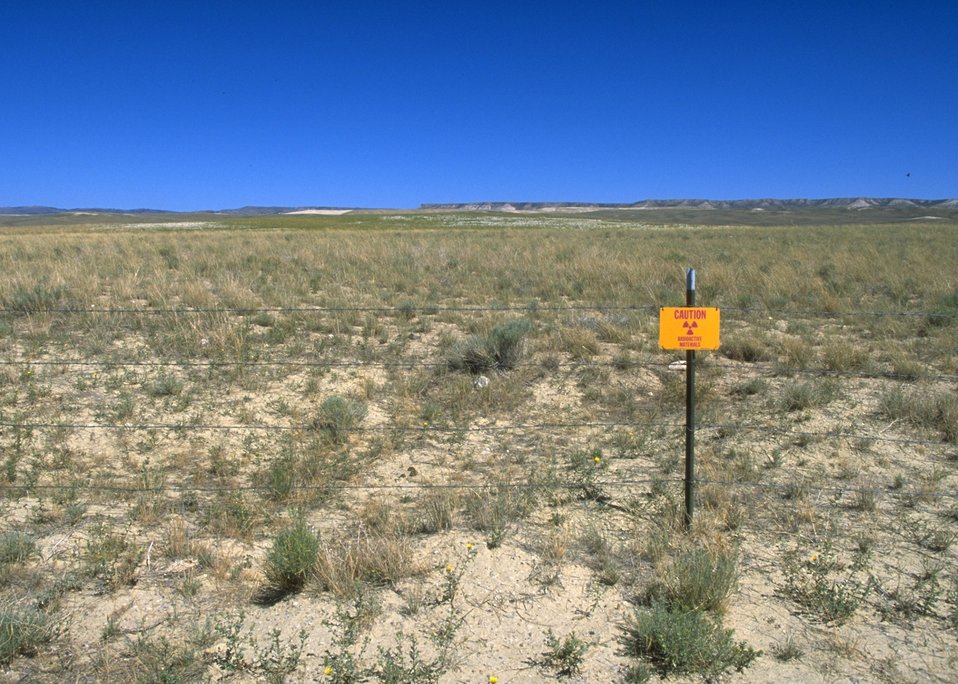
Caution sign posted concerning radioactive materials at Gas Hill Abandoned Mine Lands, Lander Field Office.